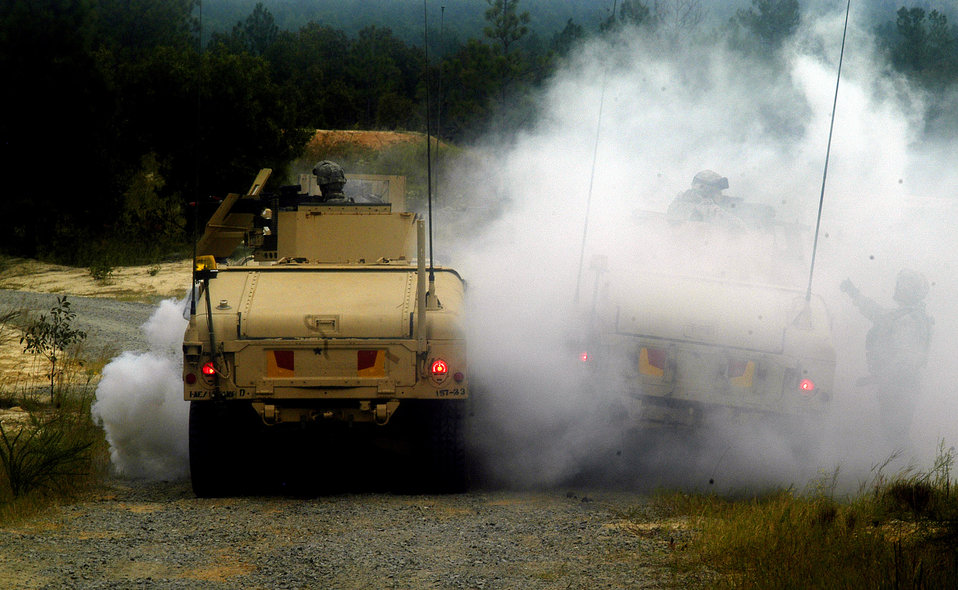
Servicembers prepare for Afghan deployments

Airmen react to a simulated improvised explosive device attack Sept. 23 at Fort Bragg, N.C. The Aimen, along with Airmen react to a simulated improvised explosive device attack Sept. 23 at Fort Bragg, N.C. The Aimen, along with Sailors and Soldiers are training at Fort Bragg as part of 12 different Provincial Reconstruction Teams headed to different Afghan provinces in November. Some of the skills they learn at Fort Bragg include convoy operations, weapons, counter improvised explosive device tactics, language and cultural training and combat lifesaving skills training.